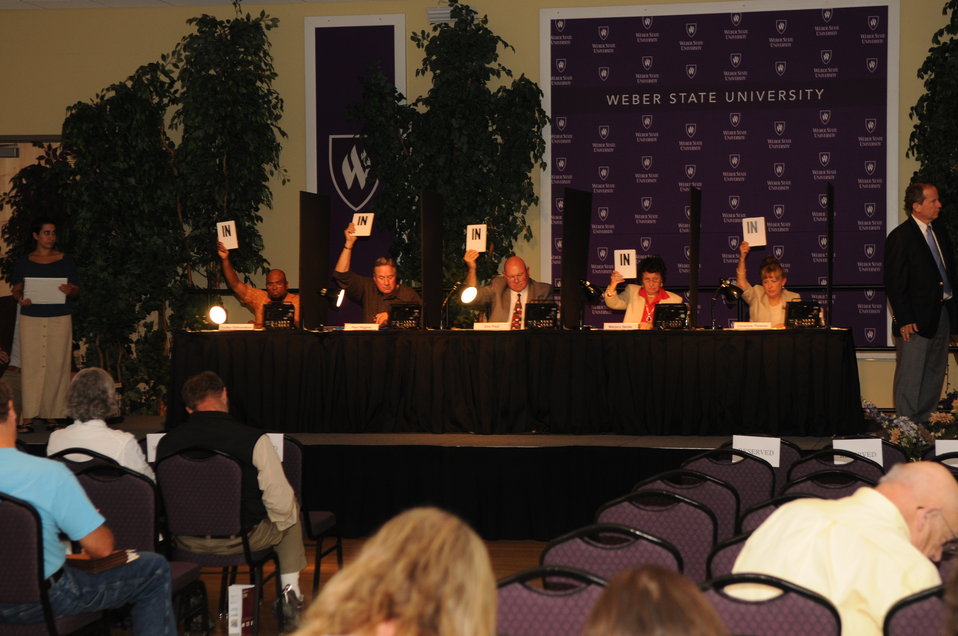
Judging

The U.S. Fish & Wildlife Service sponsored the 2012 Federal Duck Stamp Art Contest September 28 and 29 in Ogden, Utah, at Weber State University. A panel of five judges was responsible for choosing the art work used to design the 2013-2014 Migratory Bird Hunting and Conservation Stamp.